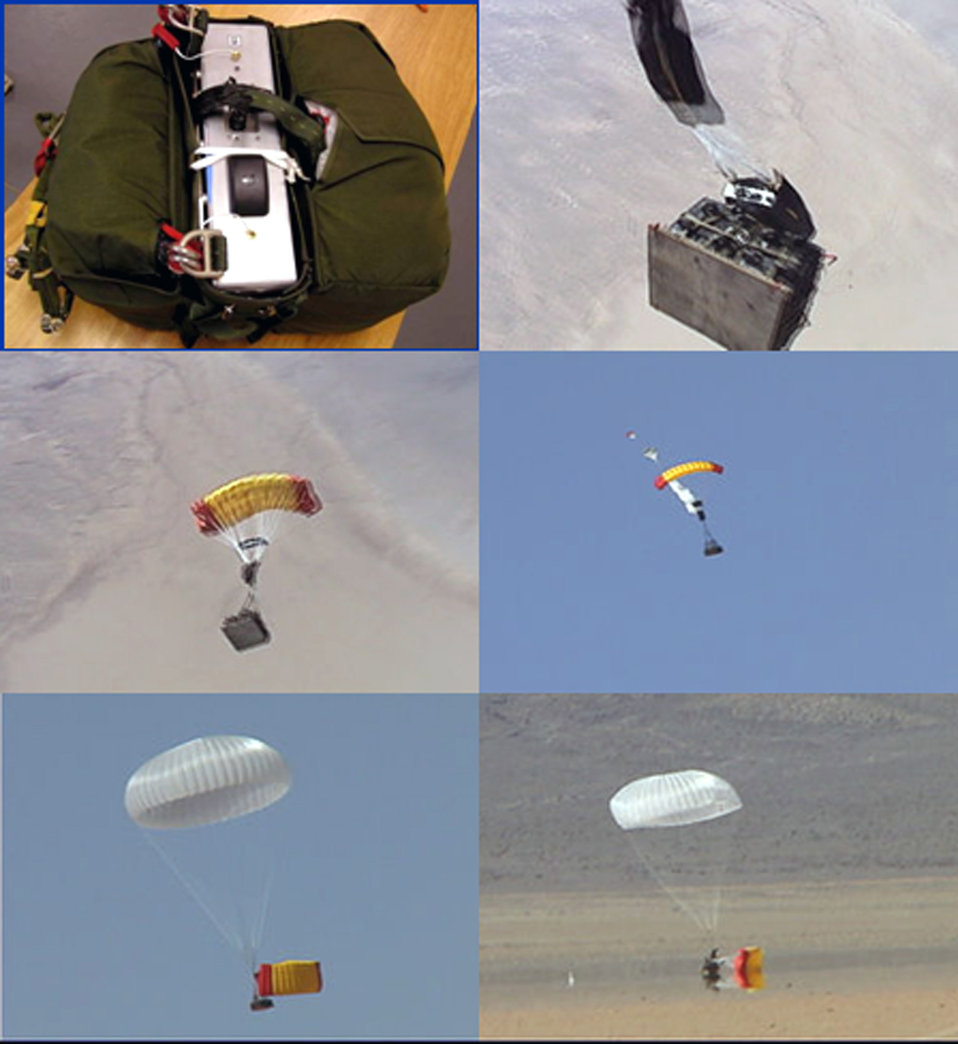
JPADS continues ‘revolution in air drop technology’

In this photo illustration, a Joint Precision Air Drop System-equipped bundle is dropped from an Air Force aircraft. The illustration shows the global positioning system-guidance system attached to the deployment of steerable and traditional parachutes en route to the bundle landing within feet of a desired location. The JPADS bundles are now being used for combat air drop missions in the war on terrorism.